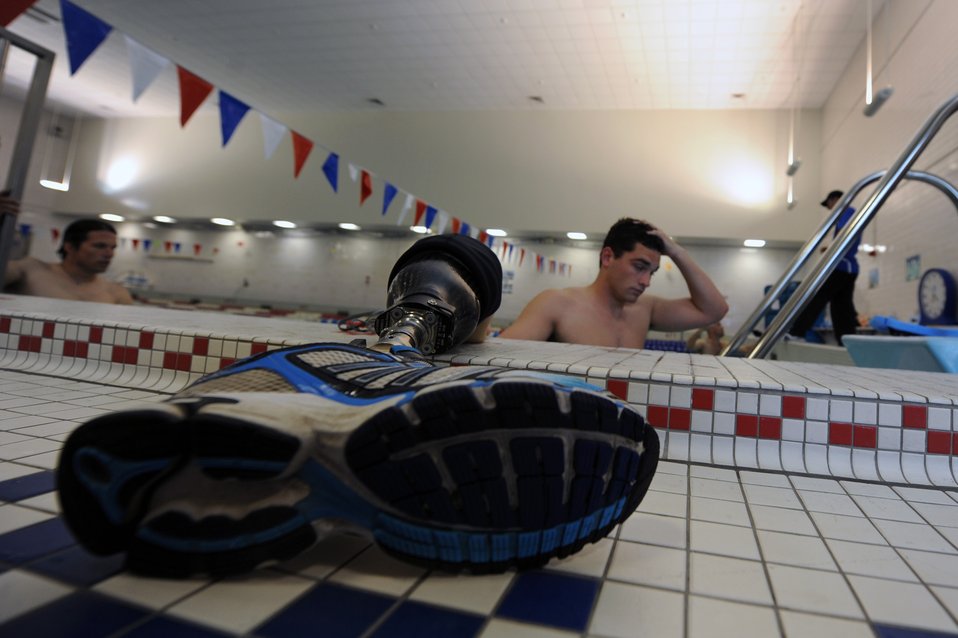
Training camp ends

2nd Lt. Ryan McGuire takes a break after finishing a lap May 7, 2010, in the pool at the Air Force Academy in Colorado Springs, Colo. Lieutenant McGuire, a member of the Air Force team that is participating in the inaugural Warrior Games, is from Laughlin Air Force Base, Texas. The Warrior Games competition begins May 10 and finishes on May 14 and is taking place at the U.S. Olympic Training Center in Colorado Springs.